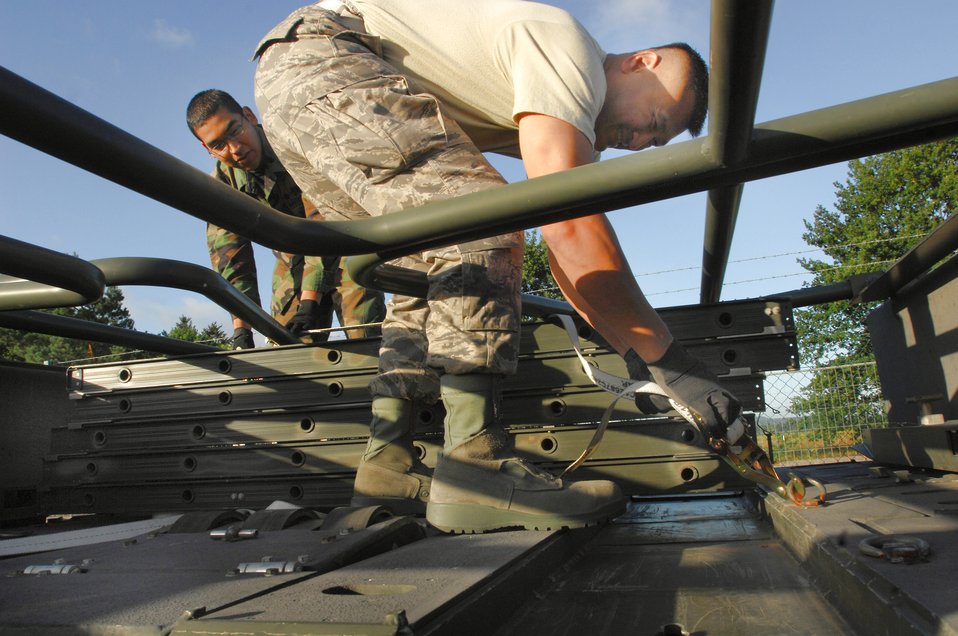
435th Logistics Readiness Squadron prepares for Georgia

Master Sgt. Seksun Monroe (right) and Airman 1st Class Rogelio Munoz prepare cargo heading to the country of Georgia Aug. 13 at Ramstein Air Base, Germany. Both Airmen are assigned to the 435th Logistics Readiness Squadron.